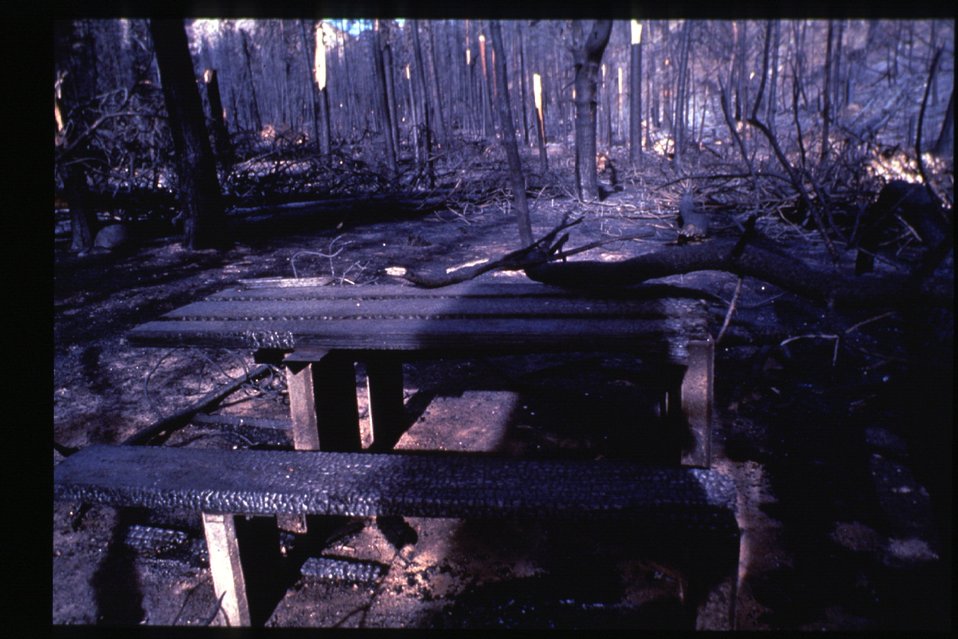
Boise Foothills Fire Danskin Mountains and South Fork of Boise River Burnt picnic table Four River Field Office LSRD Lower Snake River District